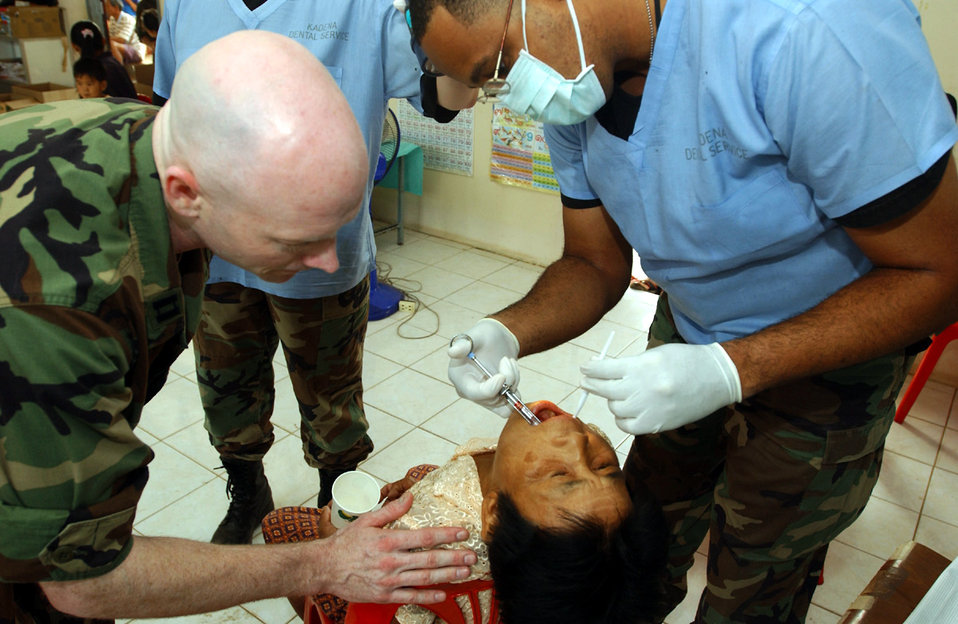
MEDCAP goes to Thailand

KORAT, Thailand -- Capts. Brad Cogswell (left) and Stephen Tanksley prepare to extract a tooth from a Thai villager. A team of 20 U.S. physicians, dentists and medical technicians, here to conduct a medical and dental civic outreach program during Cope Tiger '04, treated more than 2,100 people during the three-day event. Captain Cogswell is a Uniform School of Health Science student from Bethesda, Md., and Captain Tanksley is deployed from Kadena Air Base, Japan.